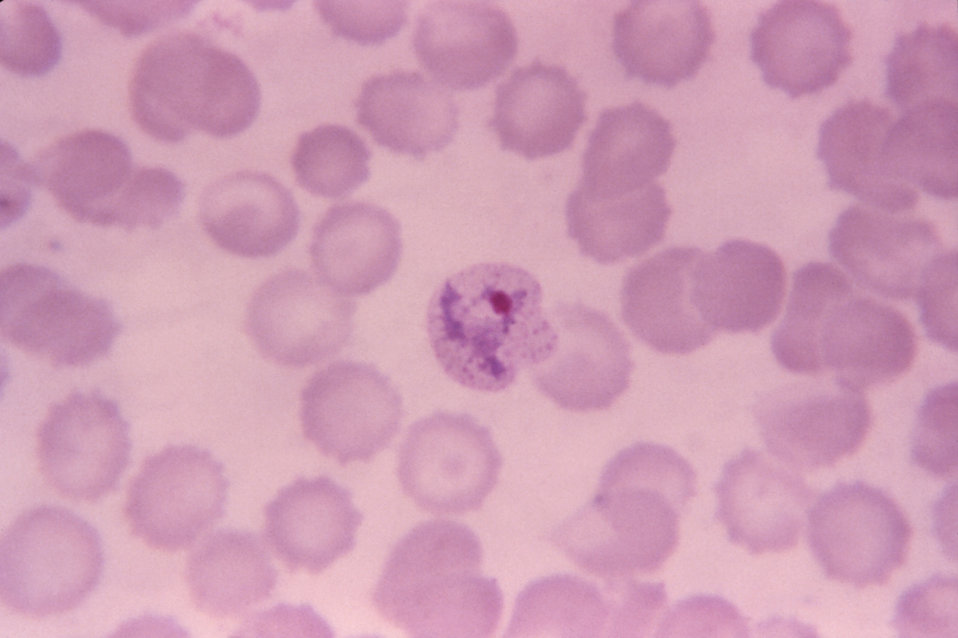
Plasmodium vivax trophozoite in blood smear.